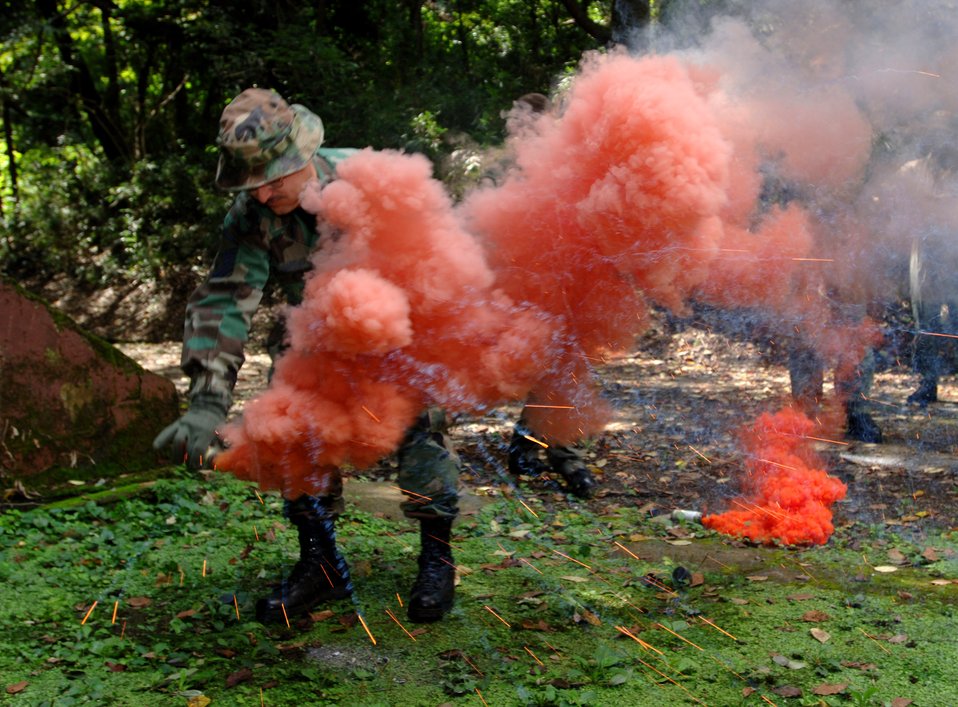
Practice makes perfect

YOKOTA AIR BASE, Japan -- Master Sgt. Rob Smith practices using flares during an exercise here. During the exercise the Airmen evaded enemy forces after their aircraft was "shot down" in hostile territory. Sergeant Smith is assigned to the 36th Airlift Squadron,